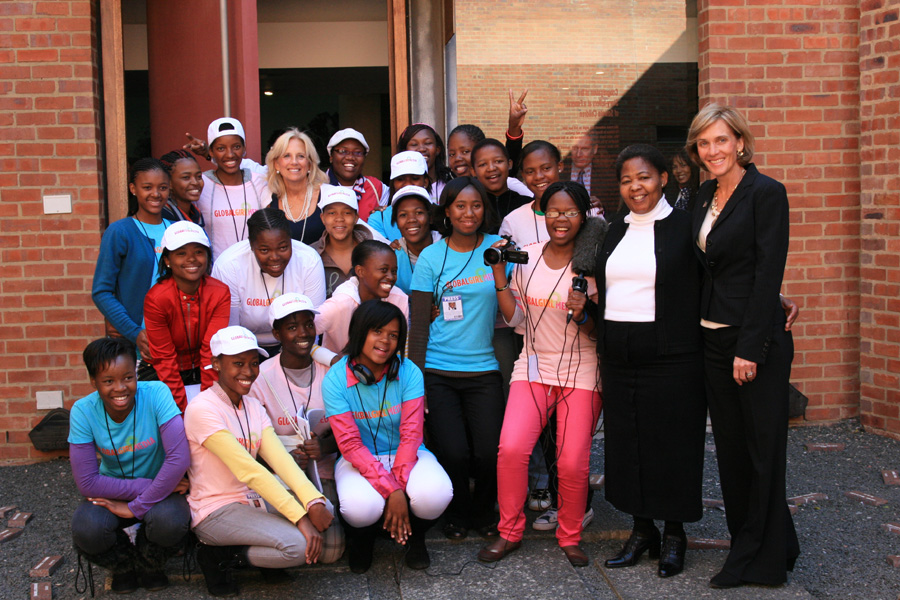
Dr. Jill Biden and Liz Berry Gips With South African Students

Dr. Jill Biden, wife of Vice President Joseph Biden, and Liz Berry Gips, wife of U.S. Ambassador to South Africa Donald H. Gips, pose for a photo with South African students at the Hector Pieterson Museum in Soweto, South Africa, on June 12, 2010.